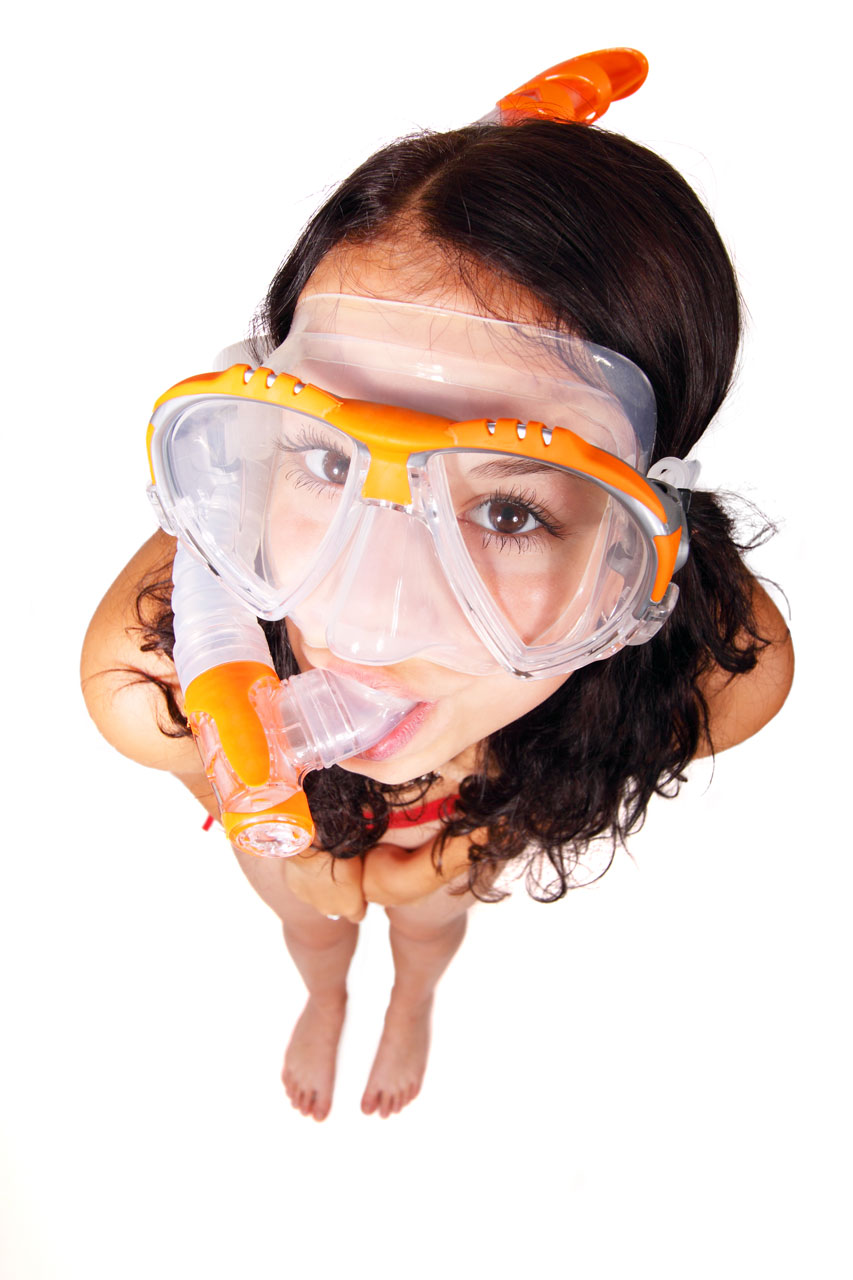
Woman snorkeling

Young woman ready to go snorkeling.